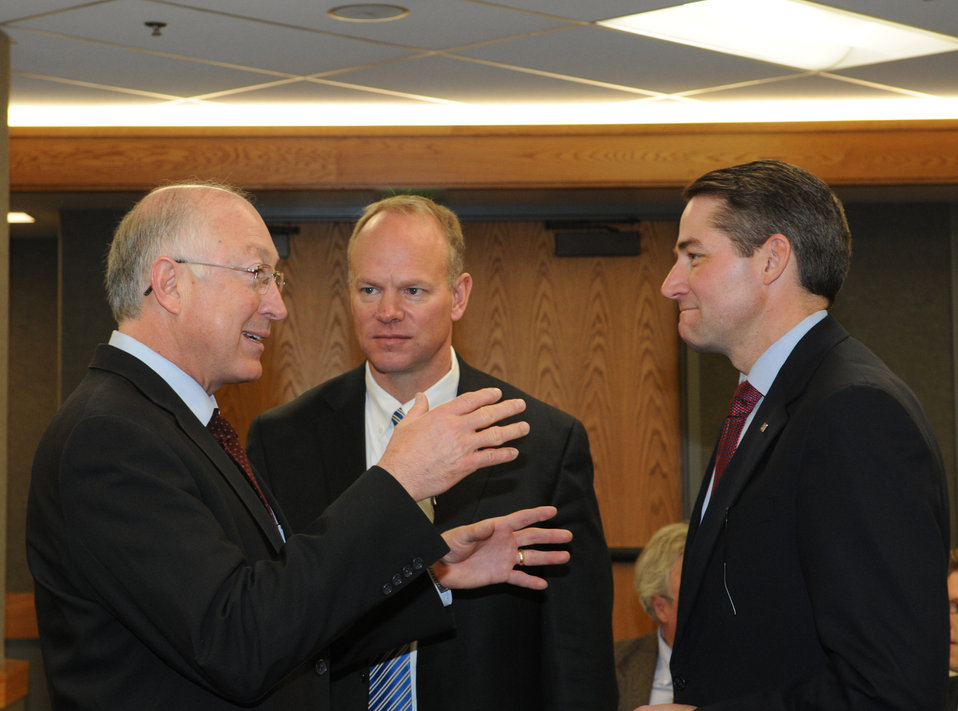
Wyoming - Gov Mead and Sec Salazar

Governor Mead of WY & Secretary Salazar

Secretary Salazar Attended a Sage Grouse Meeting in Wyoming